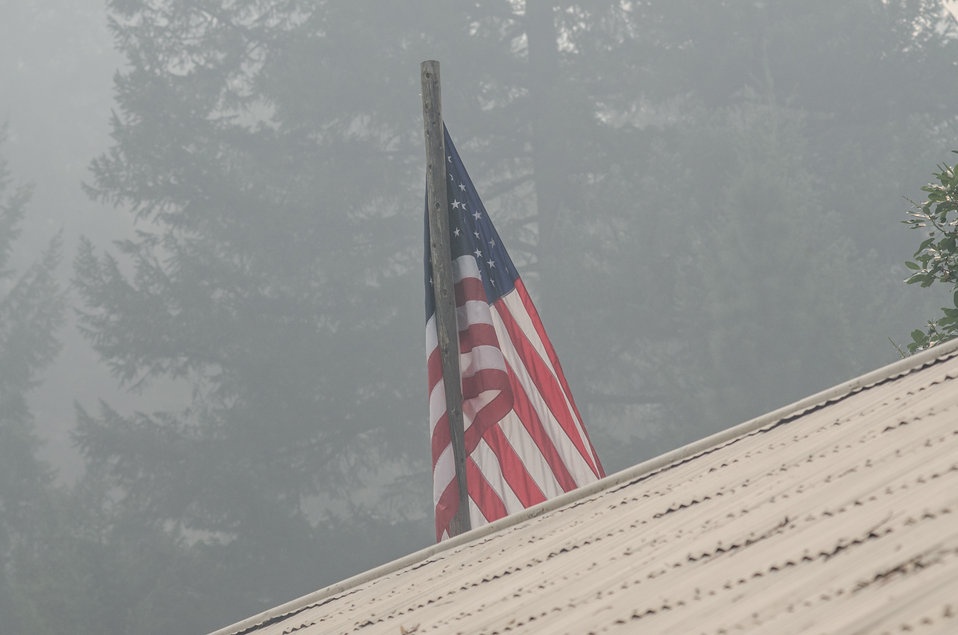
Smoke permeates the air of Sawyers Bar, CA, on Wednesday, Aug. 6, 2013. Salmon River Complex Fire is northwest of Sawyers Bar and west of Etna and Yreka, CA in the Klamath National Forest.